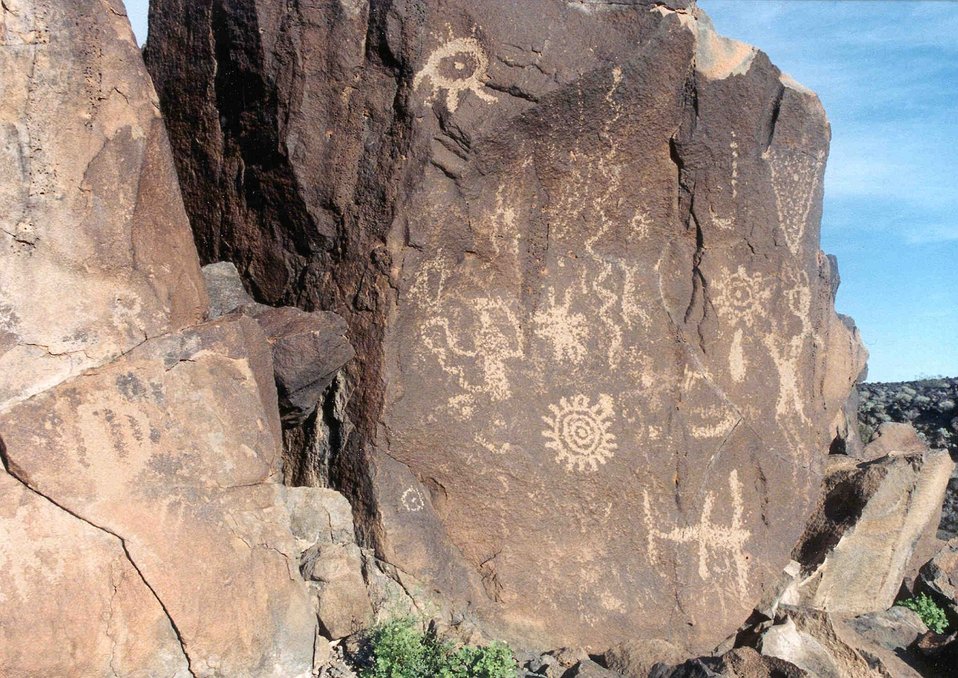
Voices in time . . . petroglyph panel at Sears Point Archaeological District